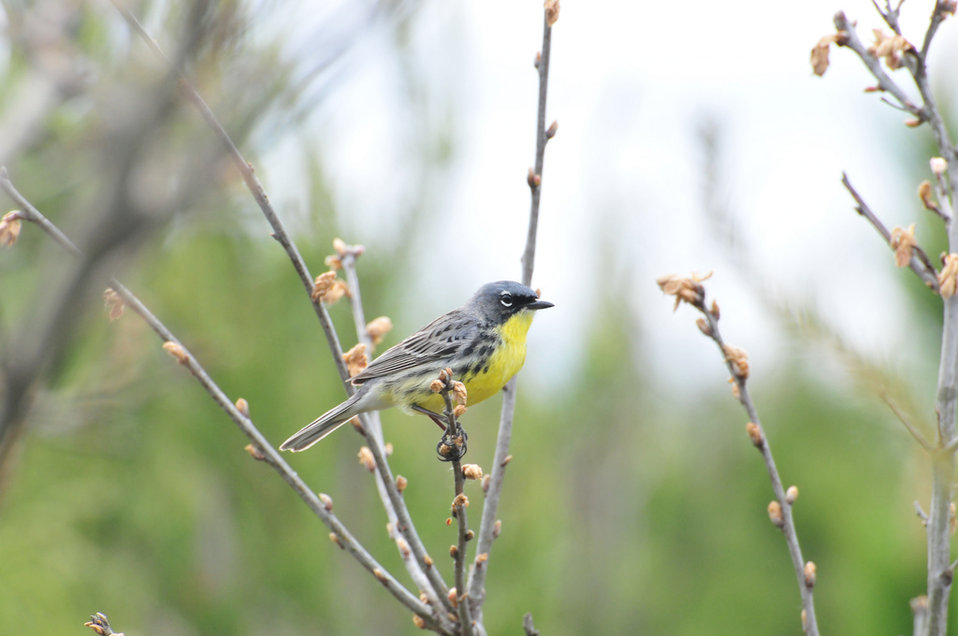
Endangered Kirtland's warbler (Dendroica kirtlandii)

Learn about the historical importance of fire in managing healthy jack pine forests in Michigan, which the endangered Kirtland’s warbler depends: www.fws.gov/endangered/news/episodes/bu-10-2011/kirtlands...